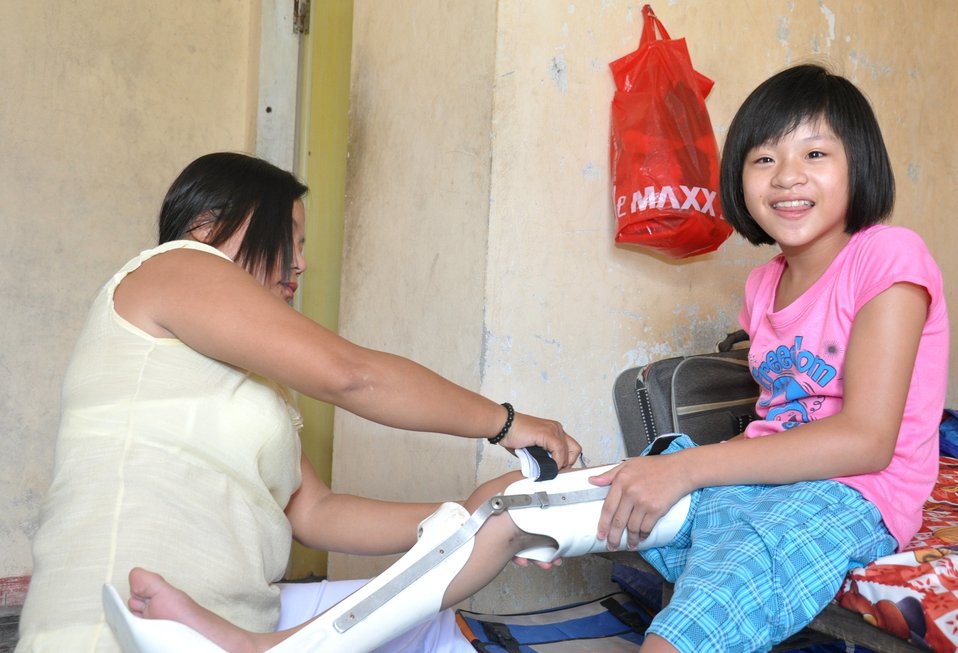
USAID supports rehabilitation for persons with disabilities in Danang.

Danang, June 10, 2013.